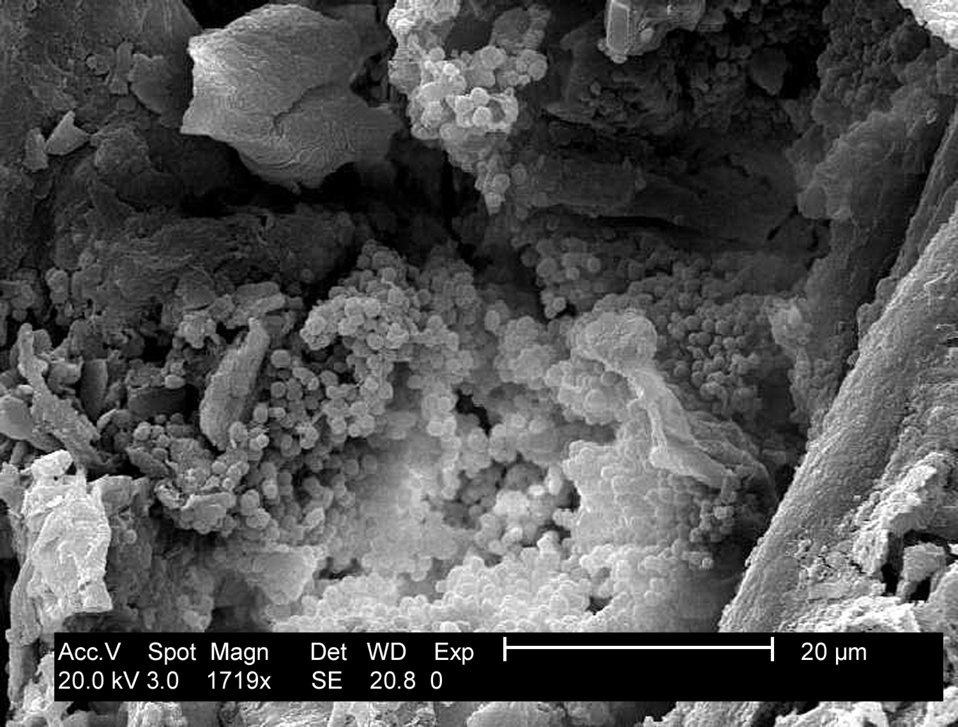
This SEM reveals the presence of staphylococcus-like organisms on samples of wood collected from steam baths; Mag. 1719x.